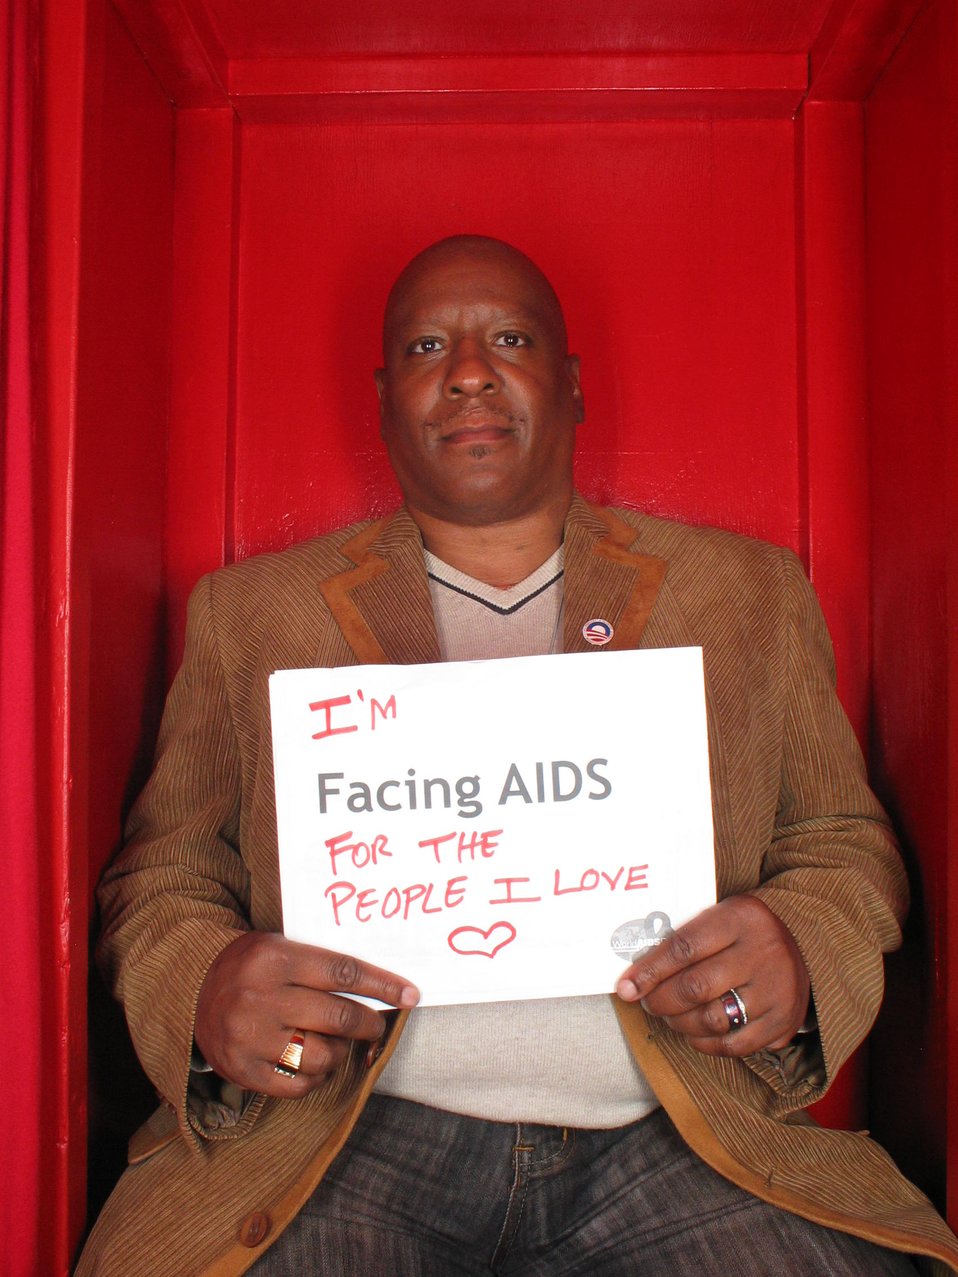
I'm Facing AIDS for the people I love.